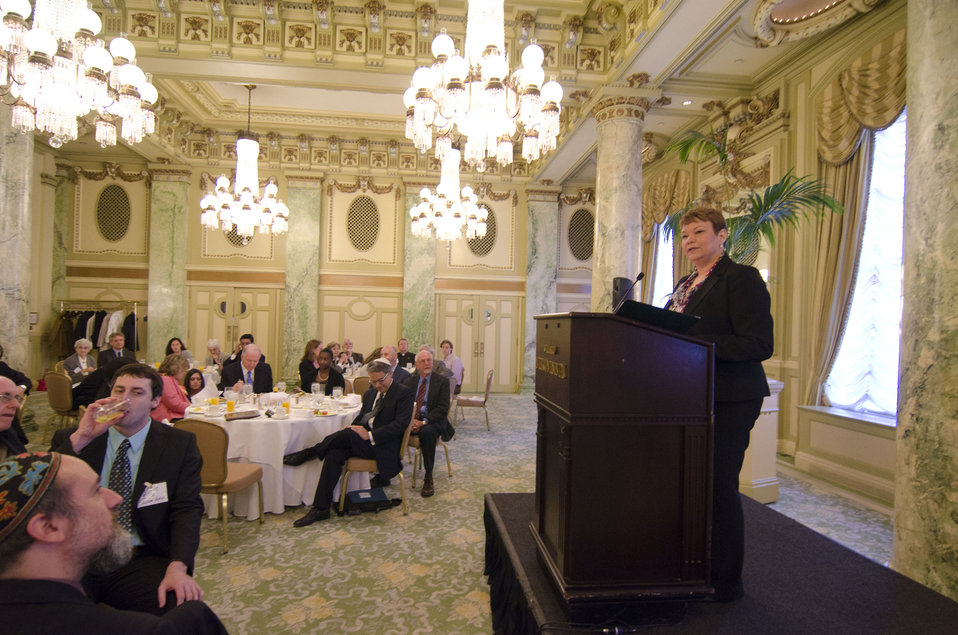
2011-05-05 NRCCCPrayerBreakfast 046

US EPA Administrator Lisa P. Jackson addresses the guests after accepting the Steward of God's Creation Award from the National Religious Coalition on Creation Care.